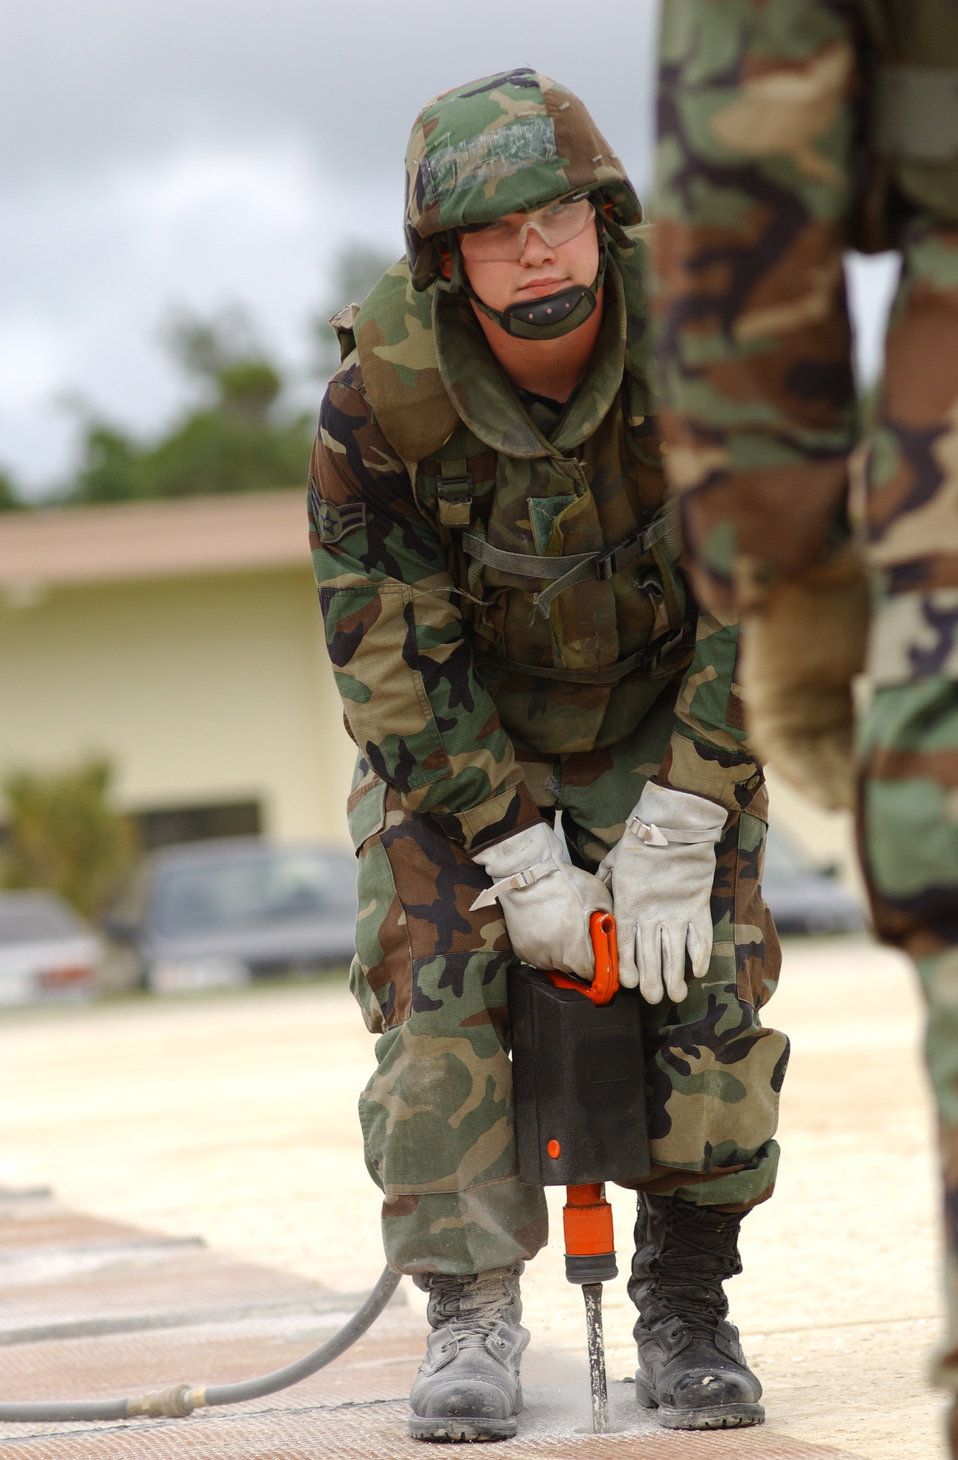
Commander's Cup Competition

KADENA AIR BASE, Japan -- Airman 1st Class David Popp drills holes into the runway to secure the matting during the Commander's Cup Competition here Oct. 25. The competition tests the abilities of civil engineer teams from the Air Force, Navy and Marine Corps to repair airfield damage caused by simulated mortar attacks. Airman Popp is assigned to the 18th Civil Engineer Squadron.